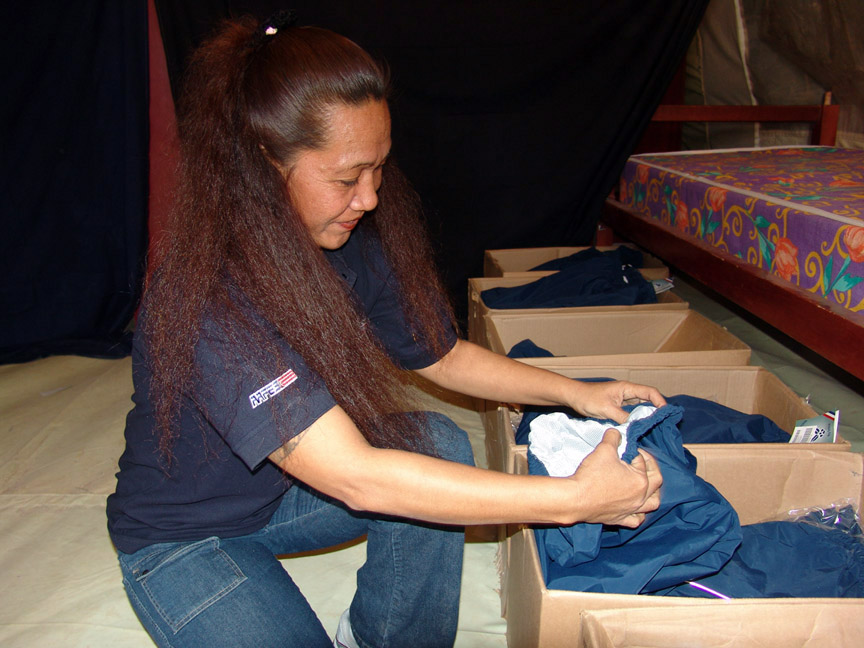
PT-ready!

SOUTHWEST ASIA -- Nella Taliau checks the size of new Air Force physical training uniform pants at a forward-deployed location. The pants and matching jacket combine with new Air Force PT shorts and shirts to give Airmen a uniform they can wear both off-duty and while exercising. Ms. Taliau is an Army Air Force Exchange Service employee.